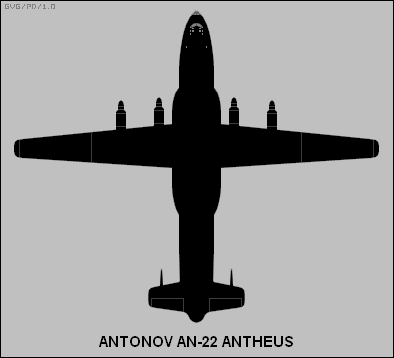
Antonov An-22